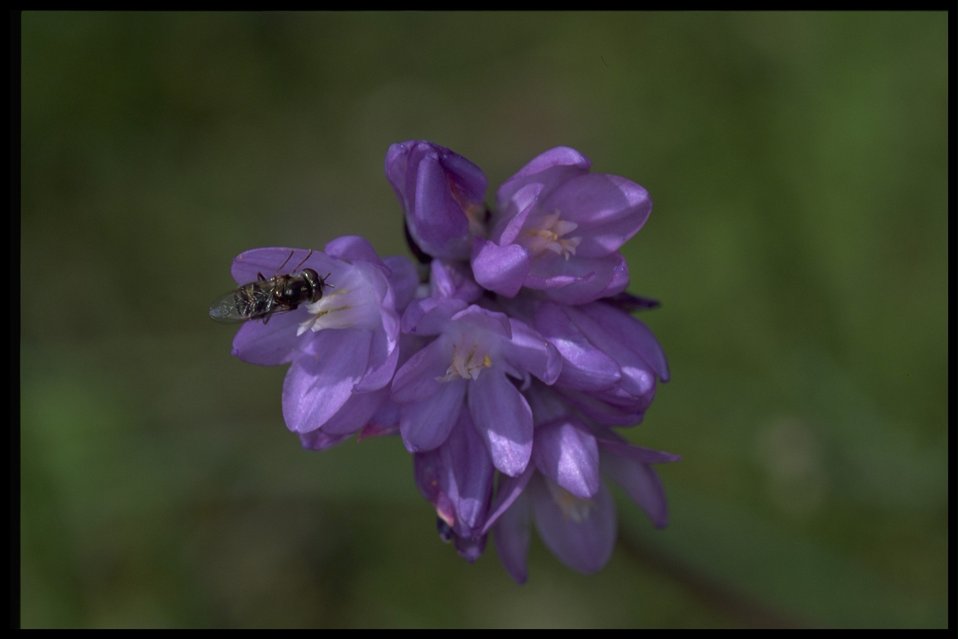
Closeup shot of Dichelostemma capitatum.